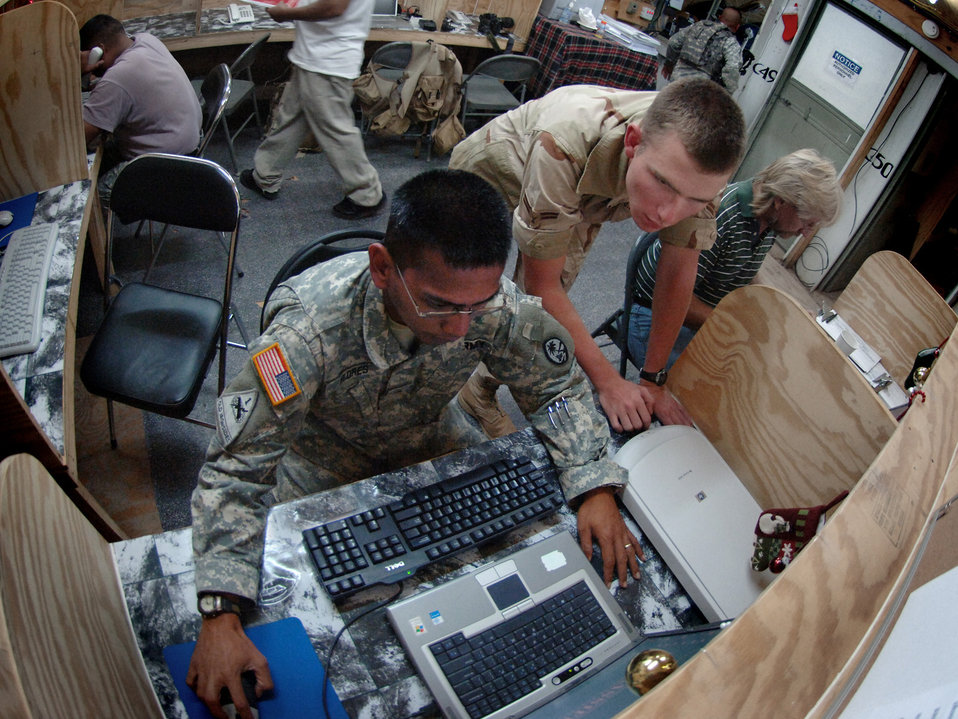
Combined Joint Task Force-Horn of Africa

Airman 1st Class Steven Brumley, standing, troubleshoots a network connectivity problem with Guam Army National Guardsman Sergeant Patrick Flores. Both are deployed to Deployed to Contingency Operating Location Bilate, Ethiopia.